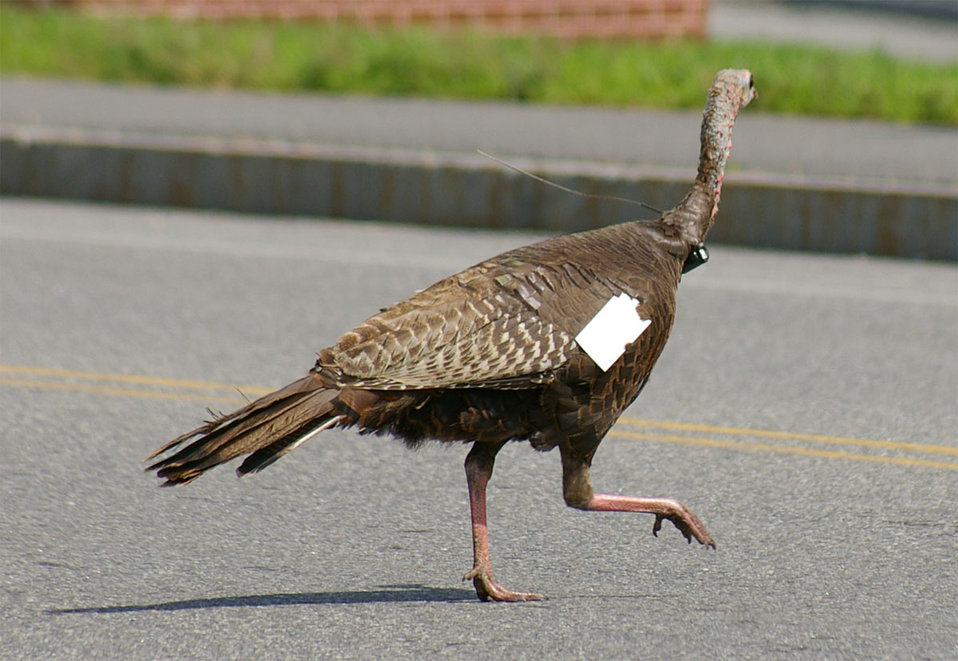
A closer look at the turkey hen with a tag and transmitter that helps APHIS Wildlife Services biologists study their habits and movements.